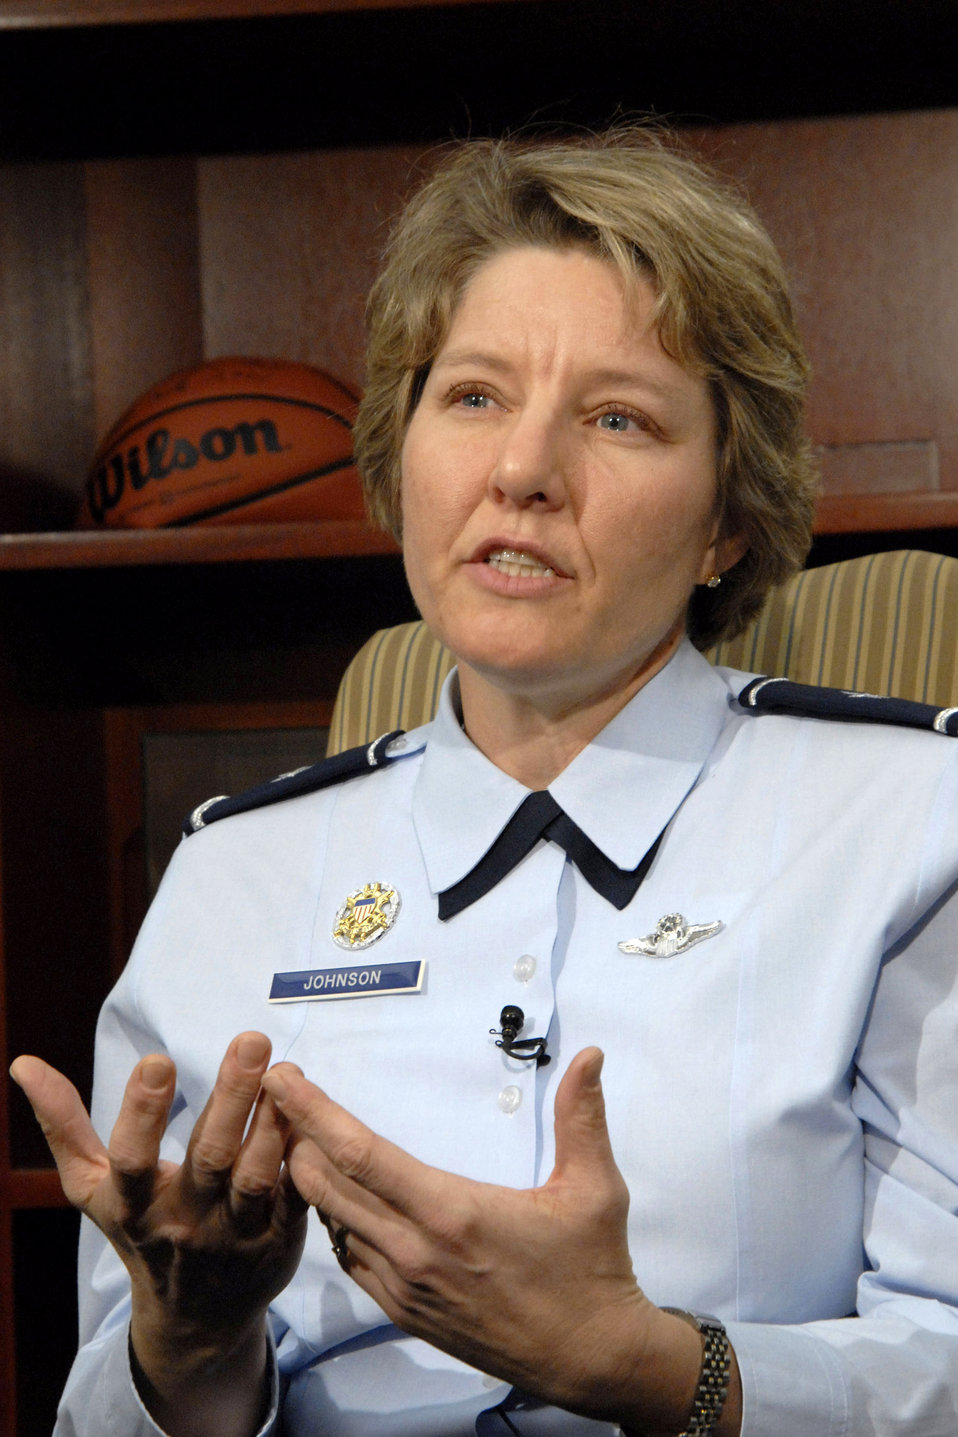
National sports program features female general

Brig. Gen. Michelle D. Johnson comments on being featured in an episode of CBS Sports Spectacular titled,